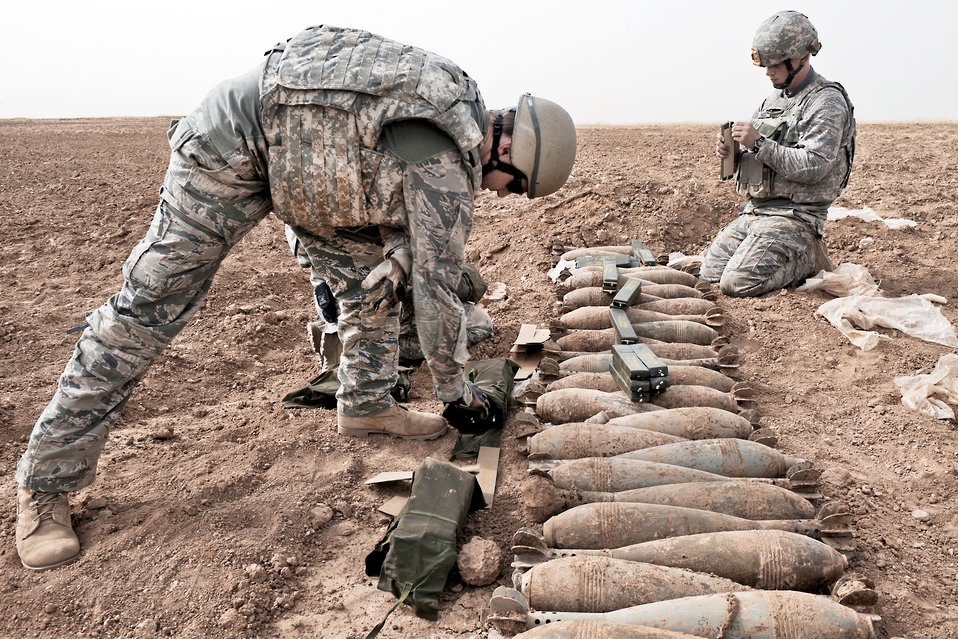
Ever so gently

Staff Sgt. Matt Skelton (left) and Staff Sgt. Charles Hodge prepare to detonate 120-mm Russian mortar rounds April 13, 2010, in a desolate area of Iraq. The two explosive ordnance disposal NCOs are with the 506th Civil Engineer Squadron at Joint Base Balad, Iraq.